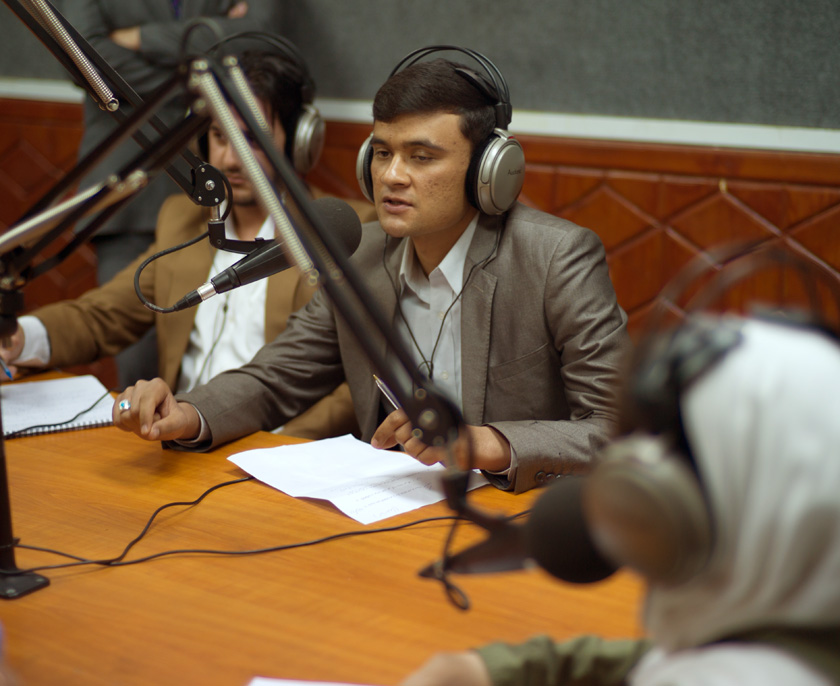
Male student 2 asking a question